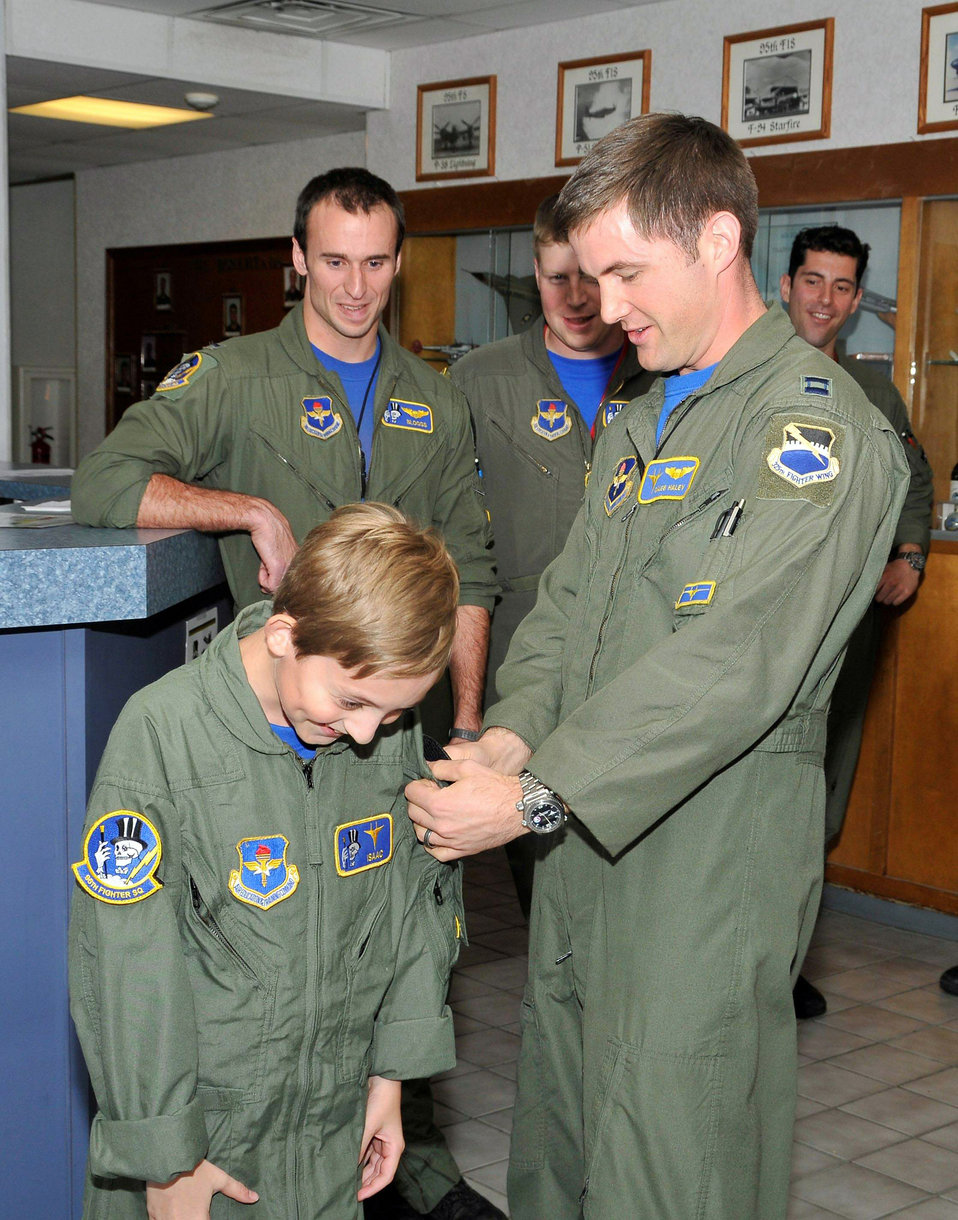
Child becomes pilot for a day

Capt. Caleb Haley presents Isaac Ezell with a 95th Fighter Squadron patch signifying the completion of his Pilot for a Day activities April 9, 2010, at Tyndall Air Force Base, Fla. Captain Haley is the 95th Fighter Squadron flight commander.